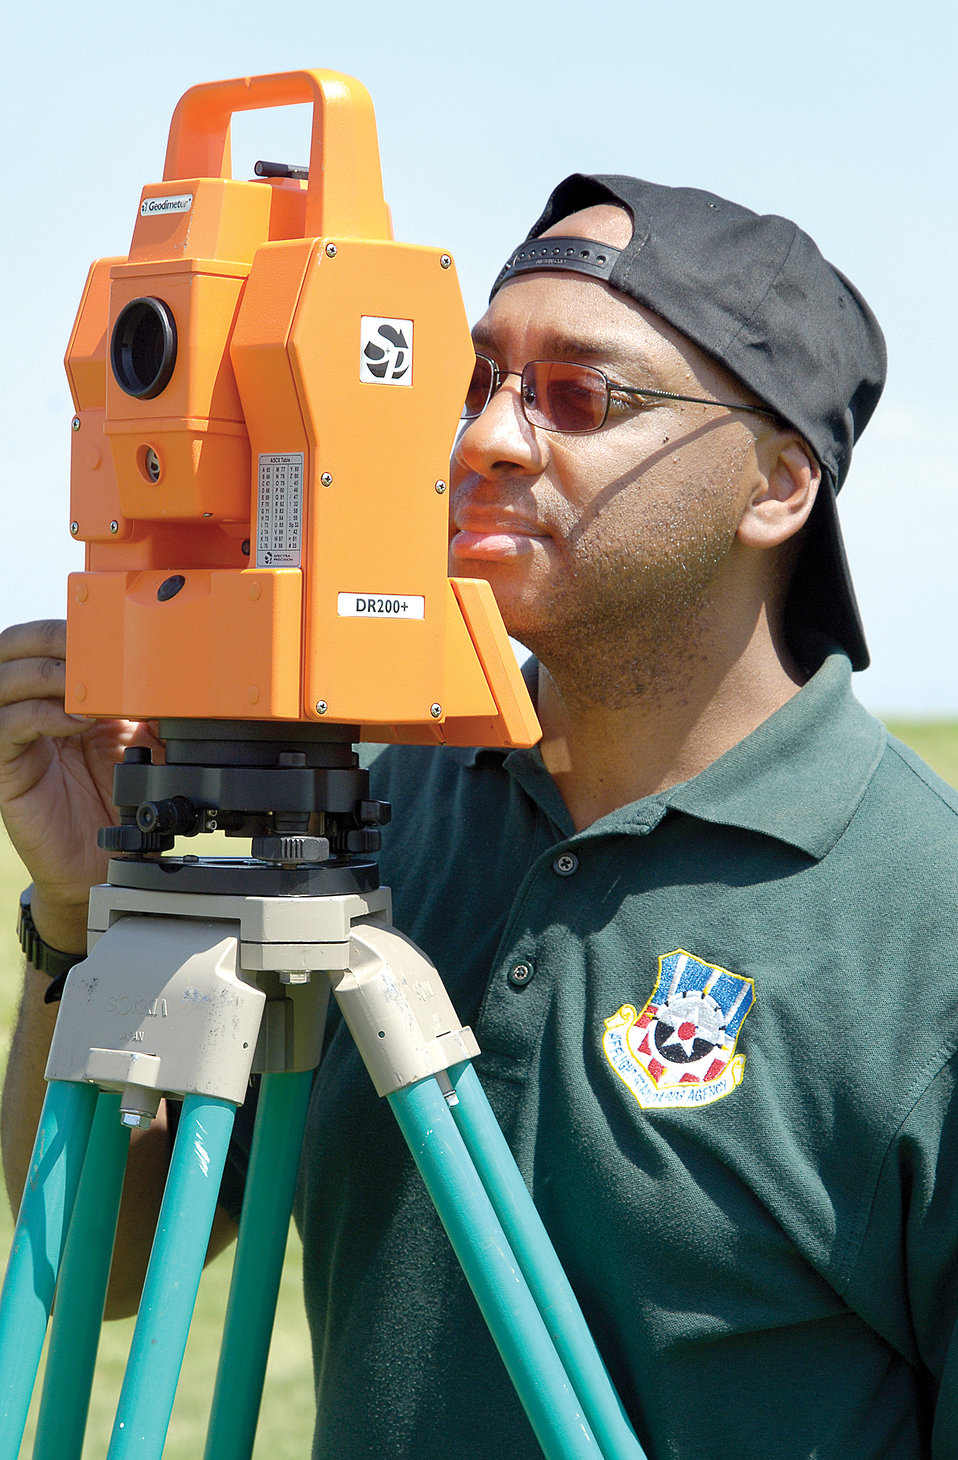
Air Force Flight Standards Agency

Dwight Bell takes a reading Aug. 31, 2009, during an airfield site inspection. Mr. Bell is a geodesist with the Air Traffic Control and Landing Systems Evaluation Division of the Air Force Flight Standards Agency in Oklahoma City. He has traveled the globe surveying and measuring bare base sites and established areas identifying any obstacles that would interfere with or degrade communication or air traffic control systems' radar signals.